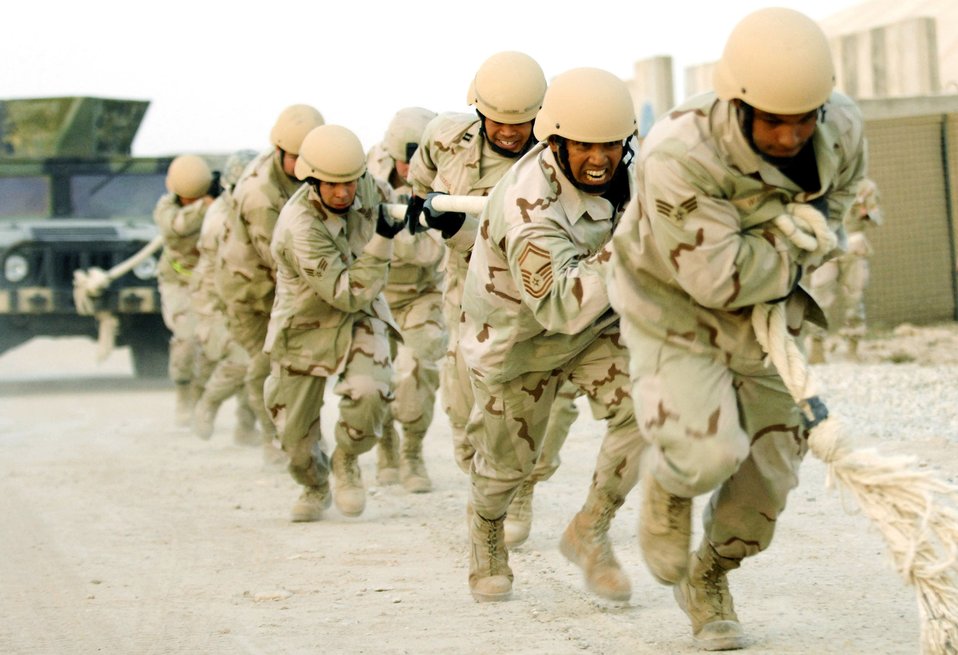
Warrior day

Members of the 407th Expeditionary Civil Engineer Squadron at Ali Air Base, Iraq, pull a Humvee during warrior day Aug. 28. The monthly competition tests Airmen's abilities to handle physically and mentally challenging situations. The 407th ECES won this month's competition.